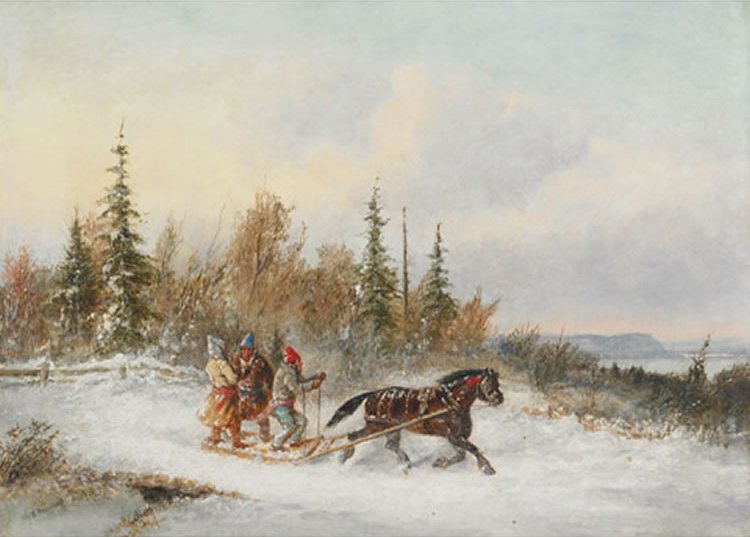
Going to Town, oil painting by Cornelius Krieghoff, 1857, 13.25 x 18 in.